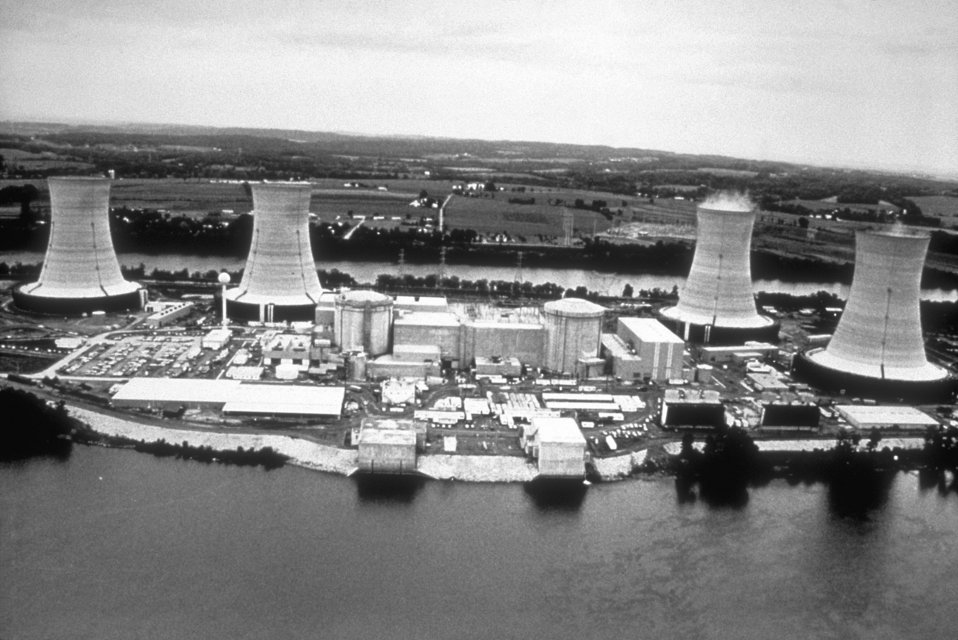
This image depicts the Tree Mile Island nuclear power plant near Middletown, Pennsylvania, which was the site of a March 28, 1979 power plant accident.